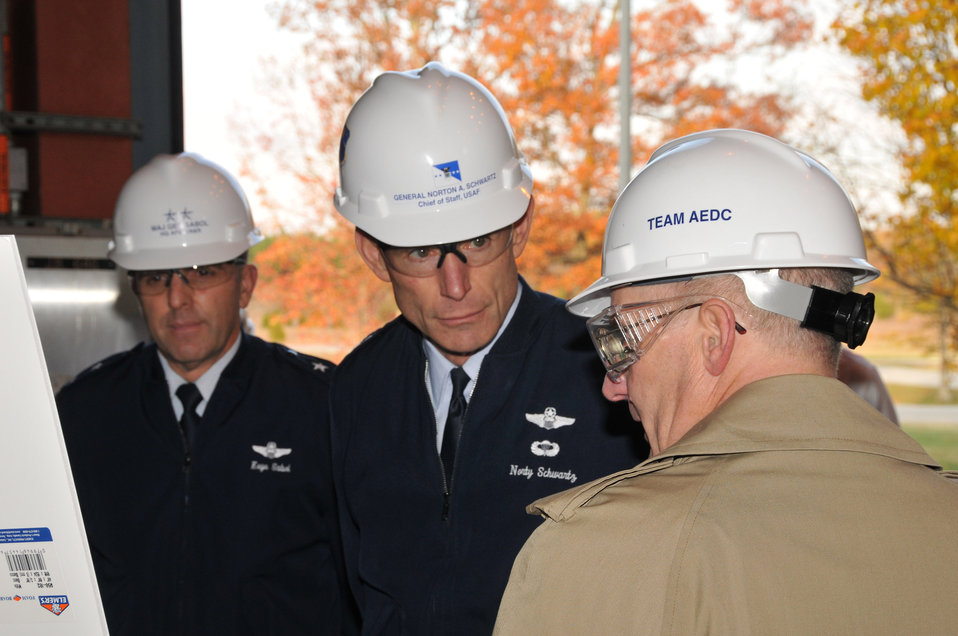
Air Force chief of staff visits Arnold

Randy Quinn describes the J-6 Rocket Motor Test Facility to Chief of Staff of the Air Force Gen. Norton Schwartz and Maj. Gen. Marshall K.